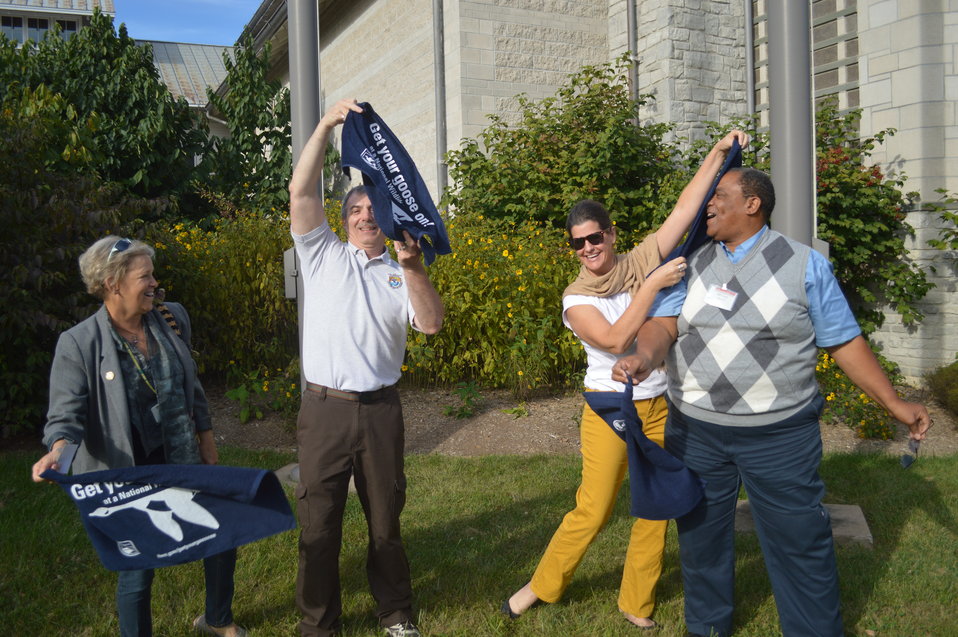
Get Your Goose On!

Photo taken at the National Conservation Training Center in Shepherdstown, WV.

Credit: Ryan Moehring / USFWS

#GetYourGooseOn